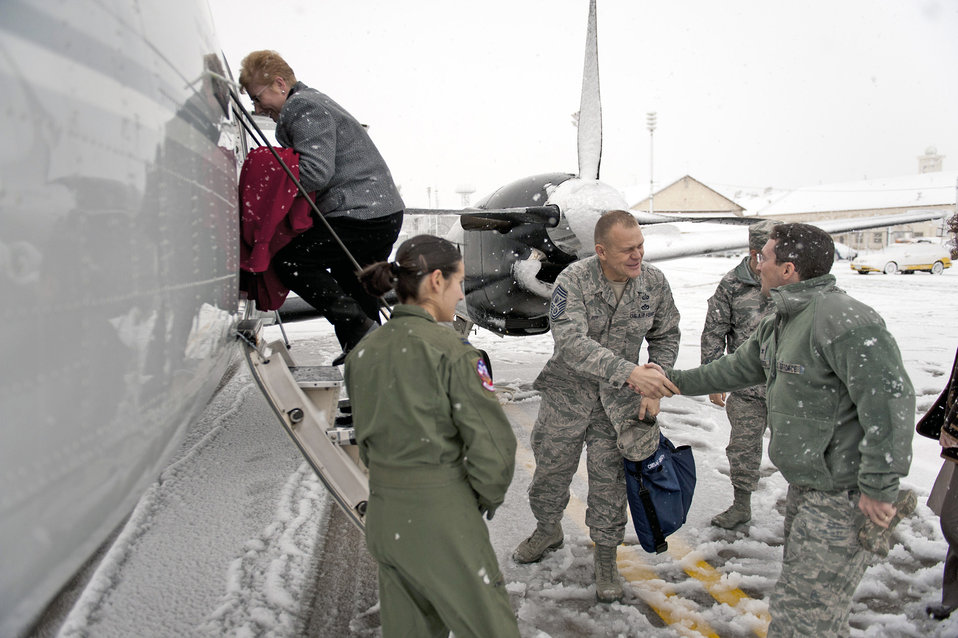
CMSAF visits Misawa

Chief Master Sgt. of the Air Force James A. Roy shakes hands with Col. Michael Rothstein Dec. 29, 2010, before boarding a C-12 Huron at Misawa Air Base, Japan. Chief Roy became chief master sergeant of the Air Force in June 2009, and visited Misawa AB to meet and learn about the Airmen of the 35th Fighter Wing. Colonel Rothstein is the 35th Fighter Wing commander.